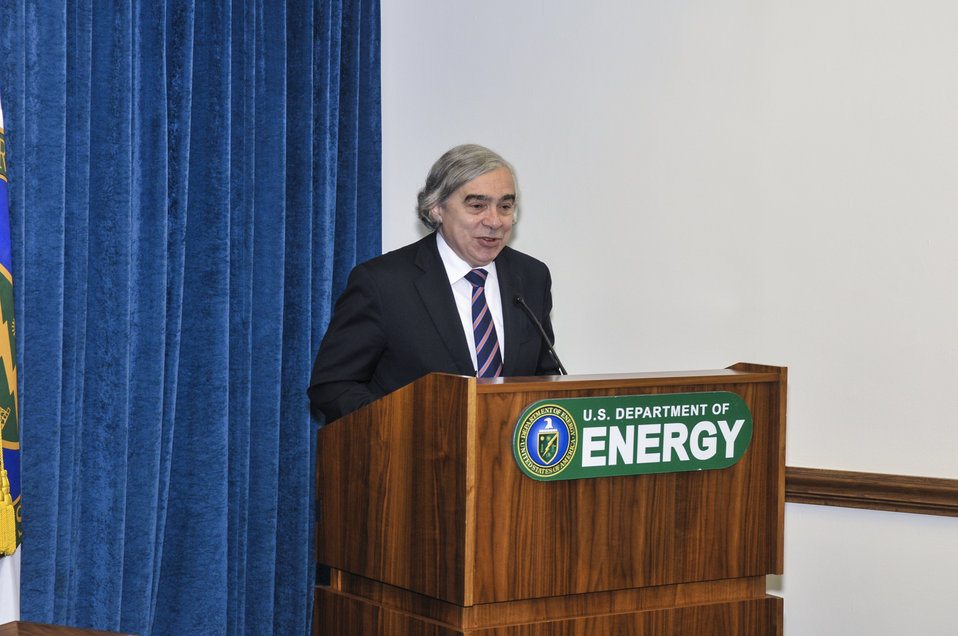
PECASE awards: DOE Secretary E. Moniz on April 14, 2014